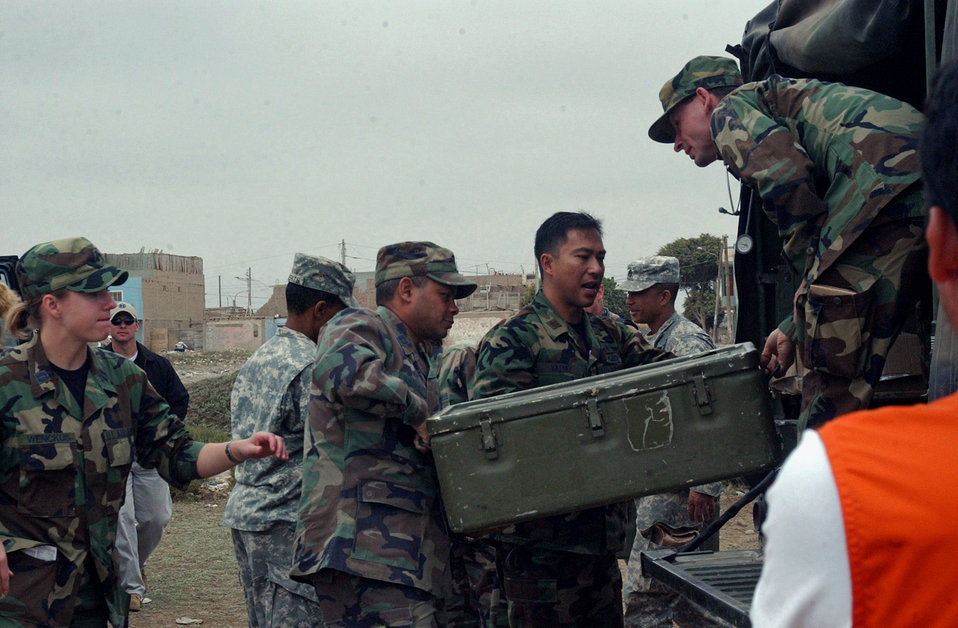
Relief in Peru

Capt. Sanjoy Malhotra, Maj. Paul Valdez and Capt. William Ingram unload medical supplies Aug. 21 in Pisco, Peru. The citizens of Pisco were provided basic medicines and medical care following the 8.0 magnitude earthquake that devastated the town Aug. 15. The officers are from Joint Task Force Bravo's medical humanitarian relief task force. JTF-Bravo members treated more than 1,500 in three days.